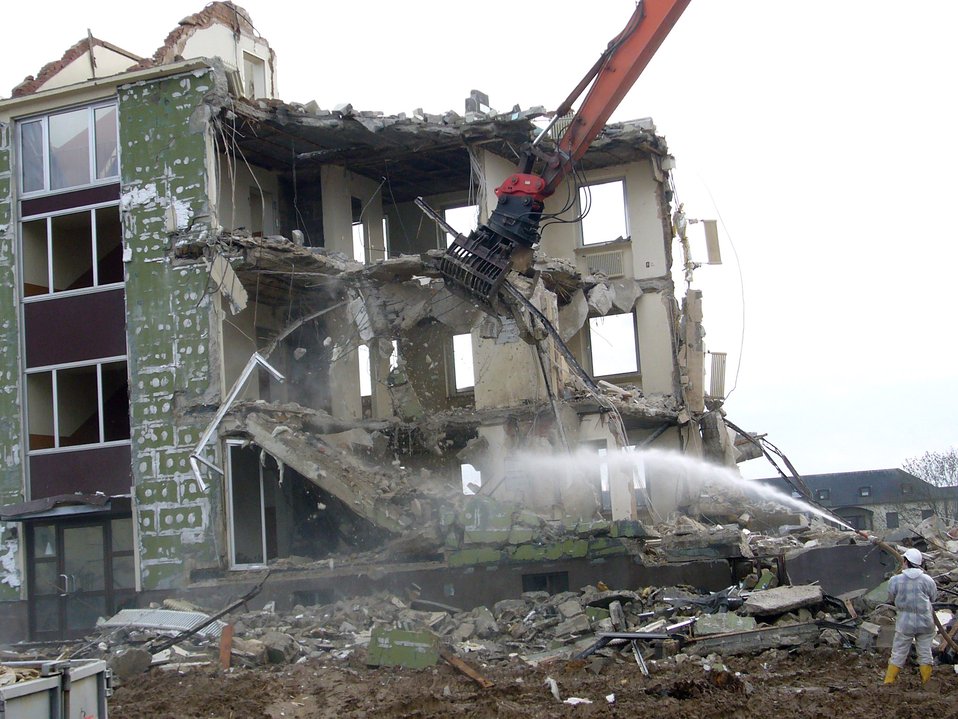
New housing on the way for Spangdahlem

The demolition of old stairwell housing began in November at Spangdahlem Air Base, Germany. The Air Force is spending $83 million to demolish the old stairwell housing and building 139 new homes at Spanghadhlem AB.